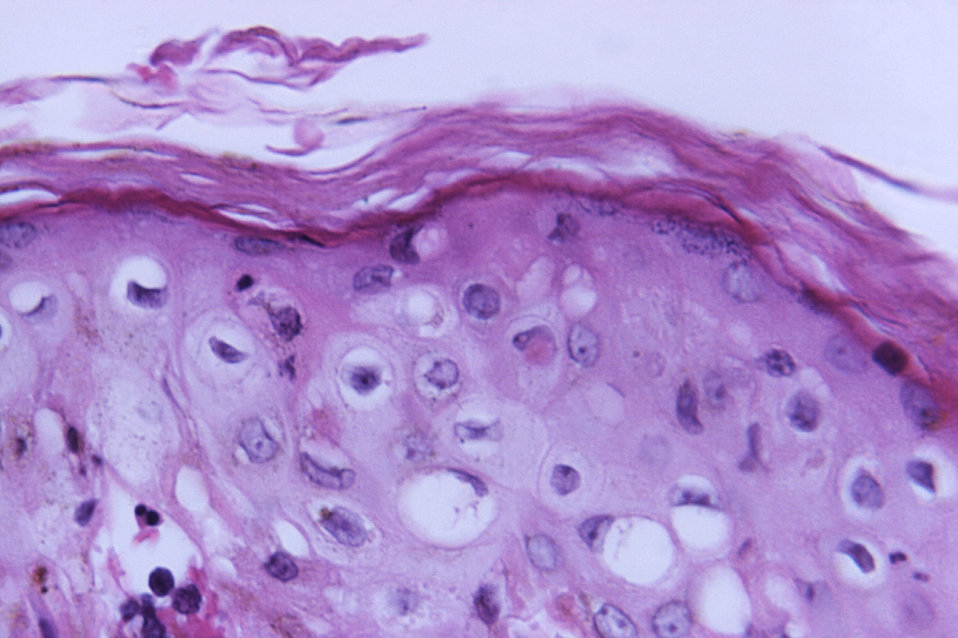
At a magnification of 500x this photomicrograph revealed some of the histopathologic cytoarchitectural changes, which manifest inside the confines of a smallpox, variola maculopapular lesion. Note the reduction in the normal thickness of the stratum corneum, which at first glance from a macroscopic appearance may appear exophytic in nature, but is really pseudoexophytic. See PHIL 10397 for an enlarged view of a small section of this image.